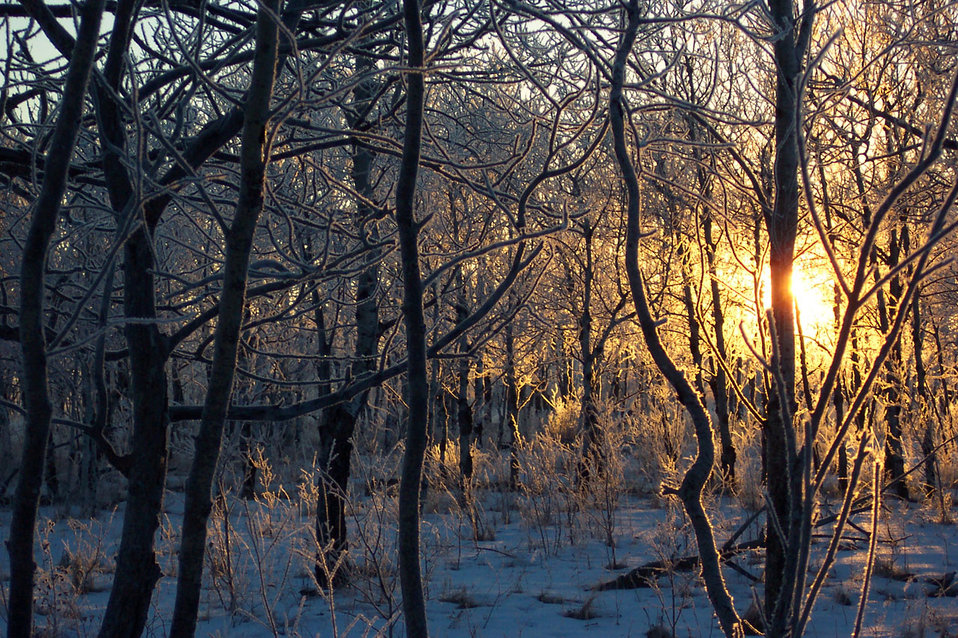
Frosty sunrise

Early morning as the sun pierces through the frosty trees.